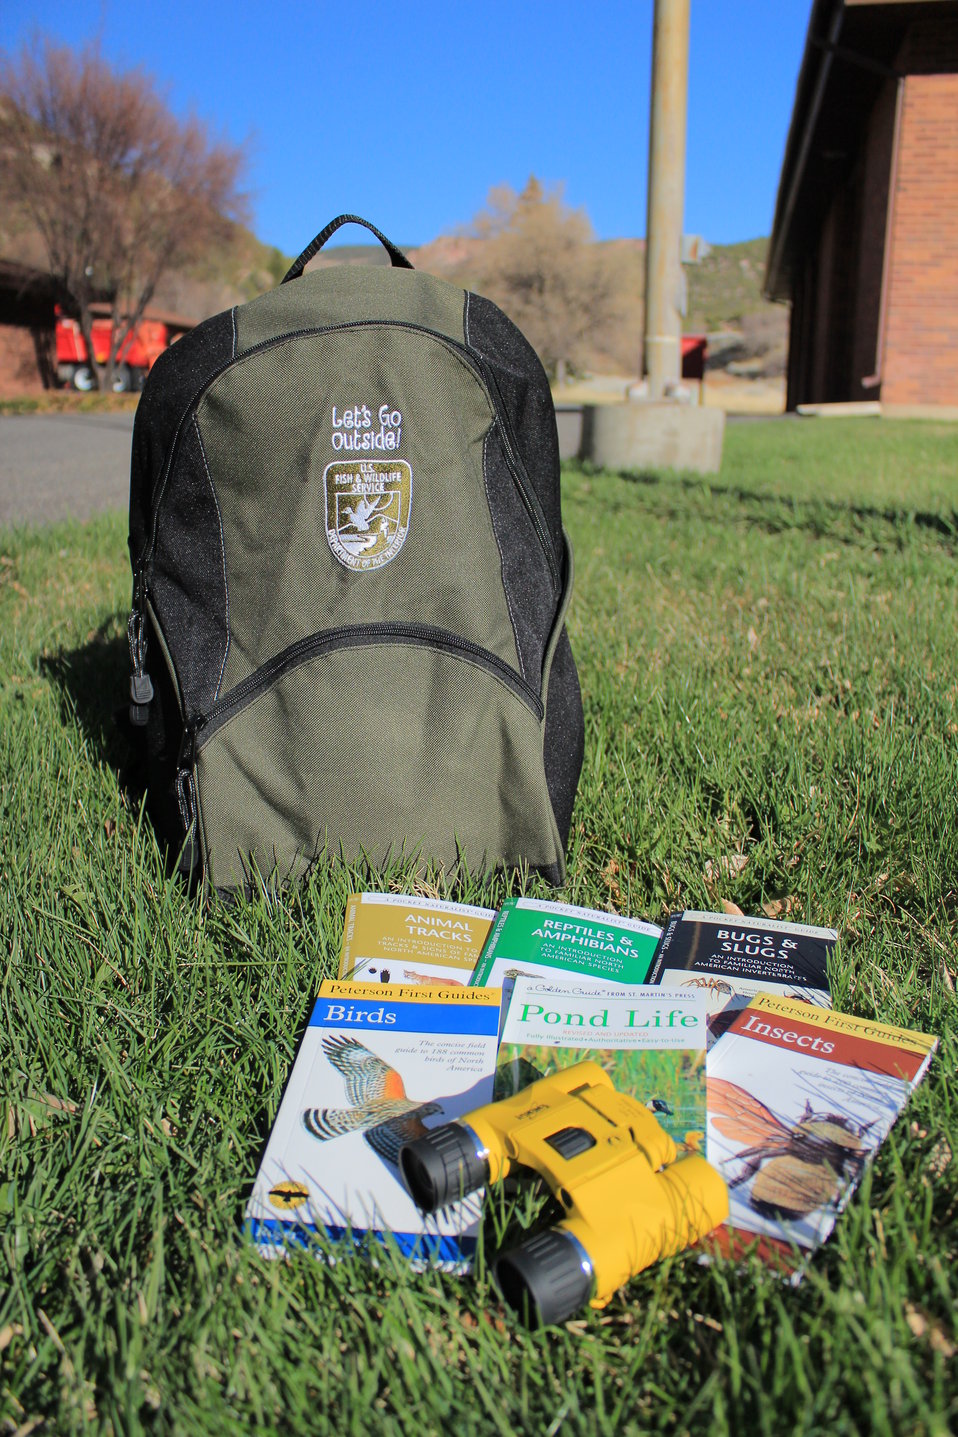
Let's Go Outside! Connecting People With Nature

Backpacks full of goodies are available to borrow at Jones Hole NFH to explore around the hatchery and Jones Hole Trail.

Location: Jones Hole NFH

Credit: Jaclyn Kircher / USFWS

Photo Contest Entry #35